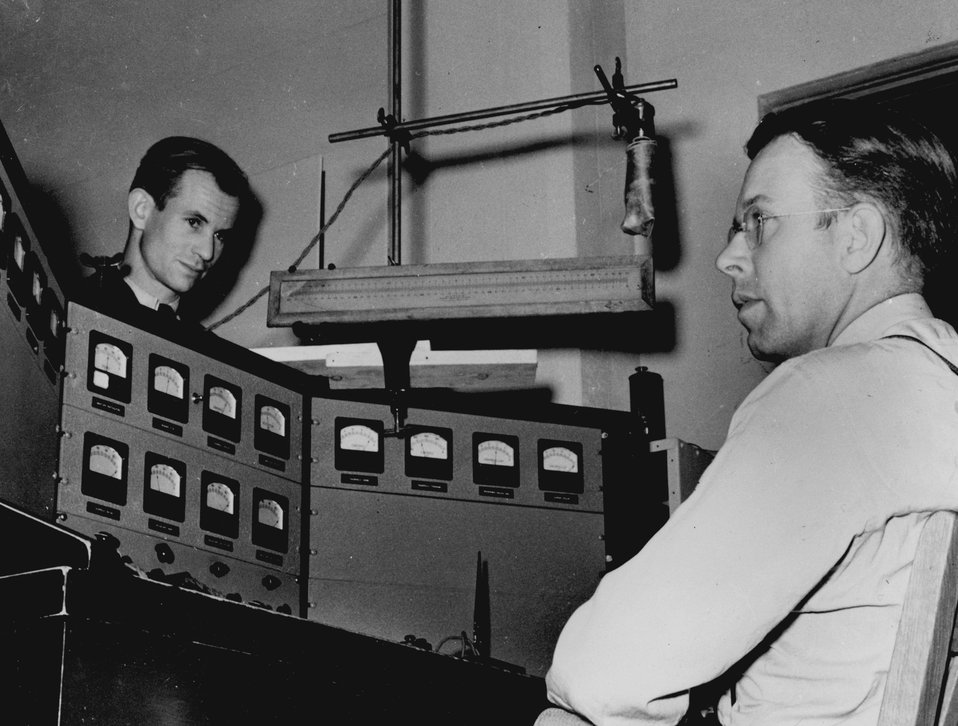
Left: Dr. Edwin M. McMillan
Right: Dr. Ernest O Lawrence